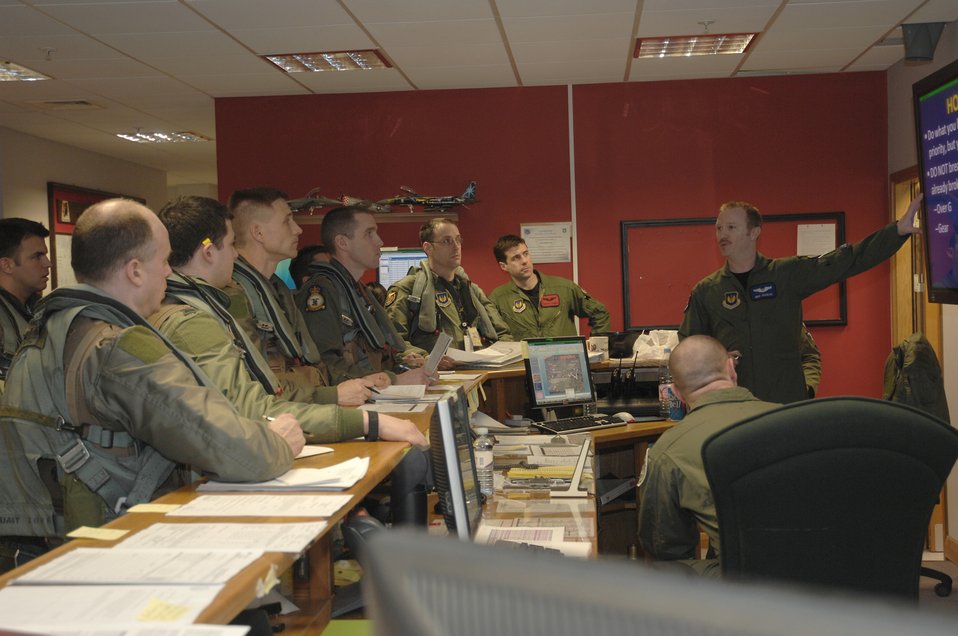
Odyssey Dawn

Capt. Mike Douglas, 492nd Fighter Squadron operations supervisor, gives a step brief to F-15E Strike Eagle crew members prior to their departure from RAF Lakenheath, England, March 19, 2011. Units from the 48th Fighter Wing are currently conducting pre-deployment procedures in support of Operation Odyssey Dawn. The 48th Fighter Wing provides all-weather, day or night air superiority and air-to-ground precision combat capability as well as combat search and rescue.